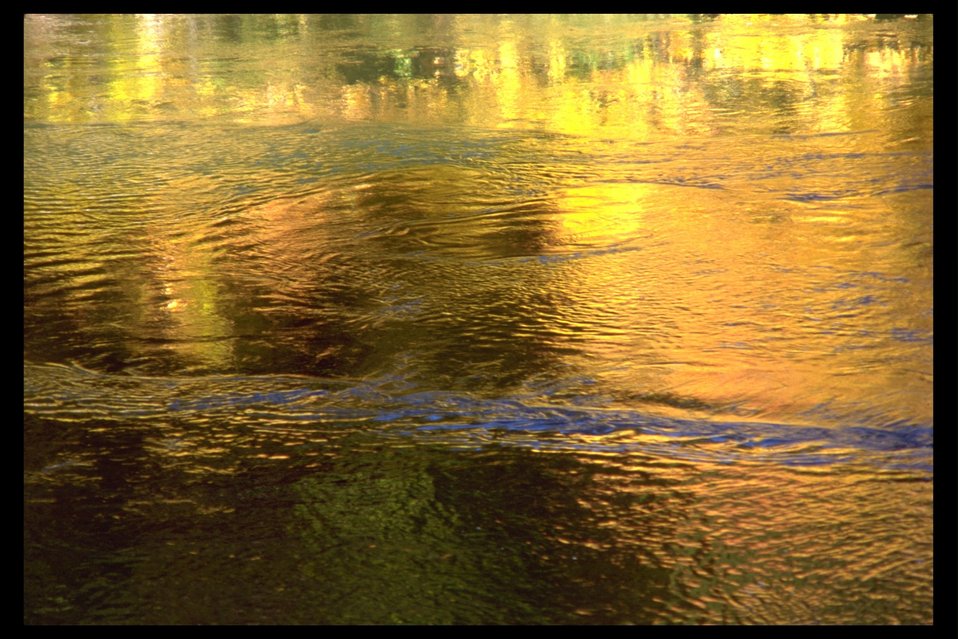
Fall colors reflected in the Rogue River near Union Creek.